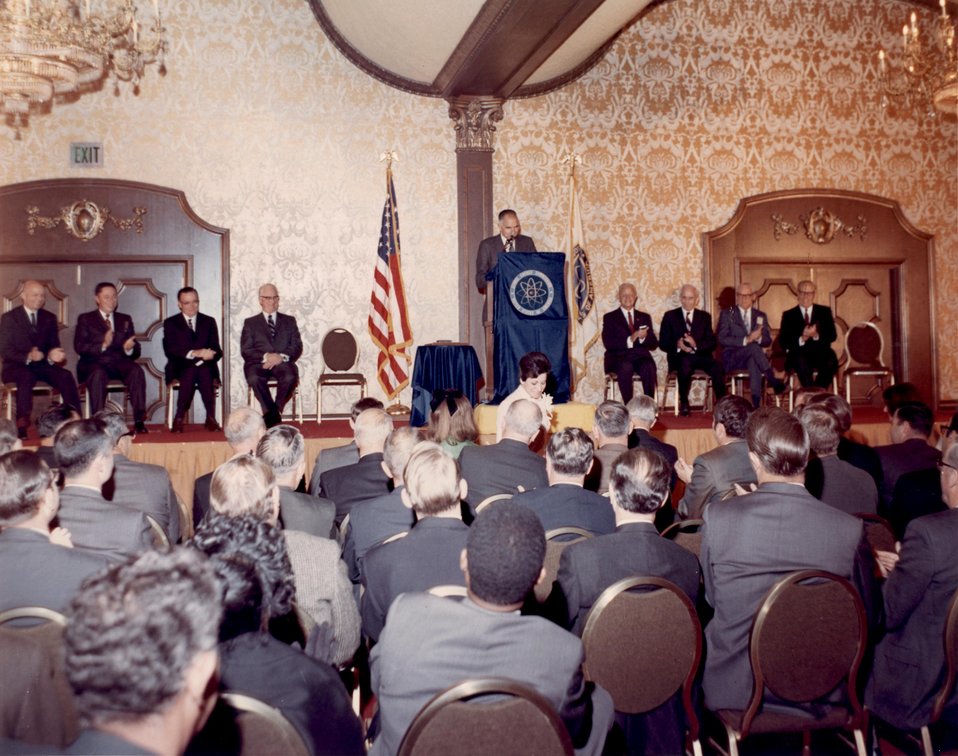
Enrico Fermi Award Ceremony. Imperial Ballroom. San Fransisco Hilton Hotel. 5:30 p.m., December 2, 1969. Fermi Award. Recipient: Walter Zinn. Date: Dec. 2, 1970.